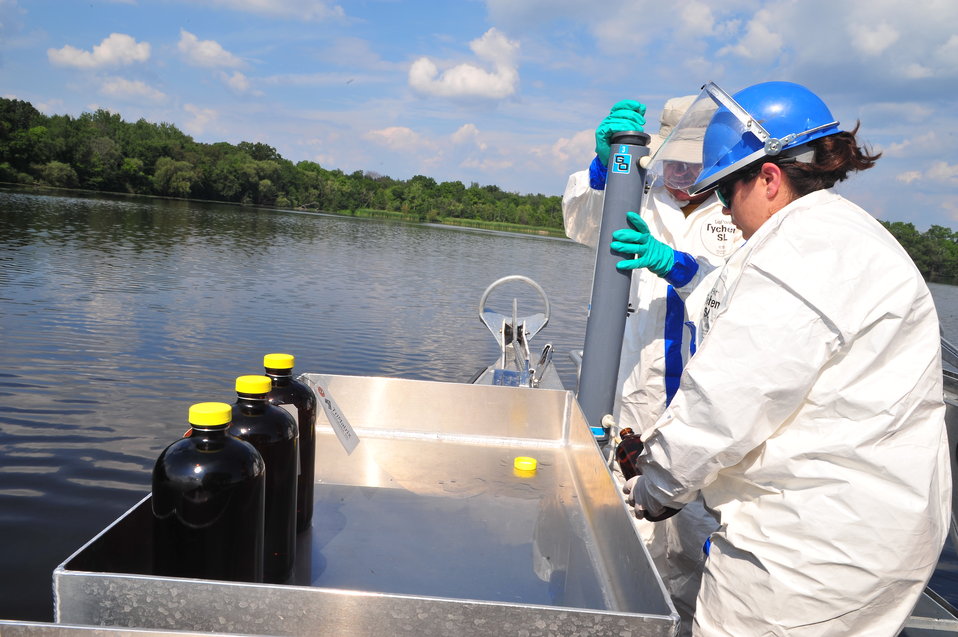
EPA sampling operations

August 2, 2010 - Water and sediment sampling operations during Enbridge Spill Response on Morrow Lake near Battle Creek, Michigan from Mudpuppy II, EPA's news research vessel.